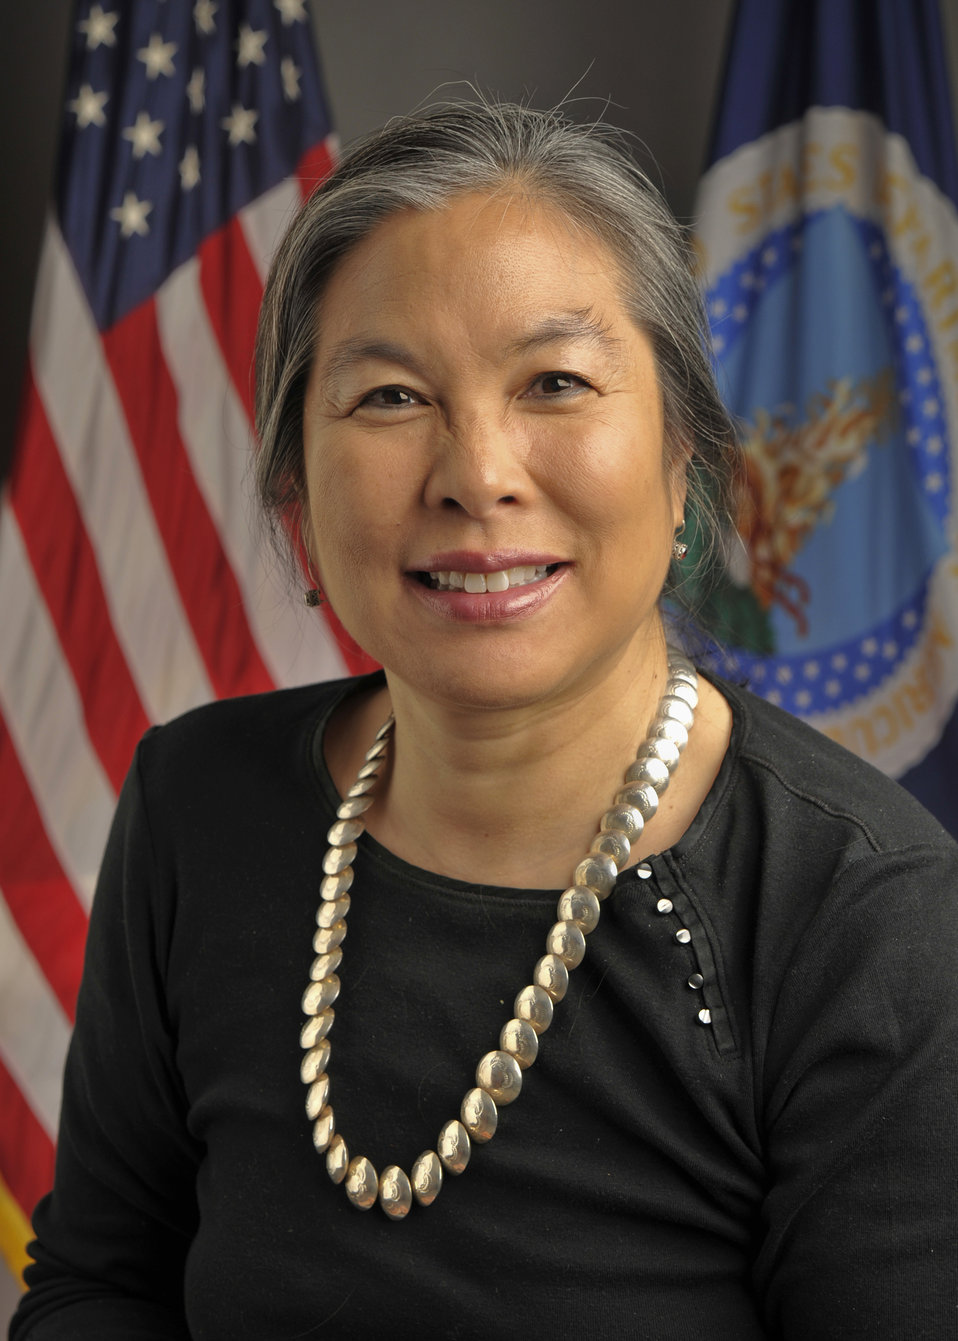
10di1065 Deputy Assistant Administrator Food Safety and Inspection Service Dr. Vivian Chen

Deputy Assistant Administrator Food Safety and Inspection Service Dr. Vivian Chen.